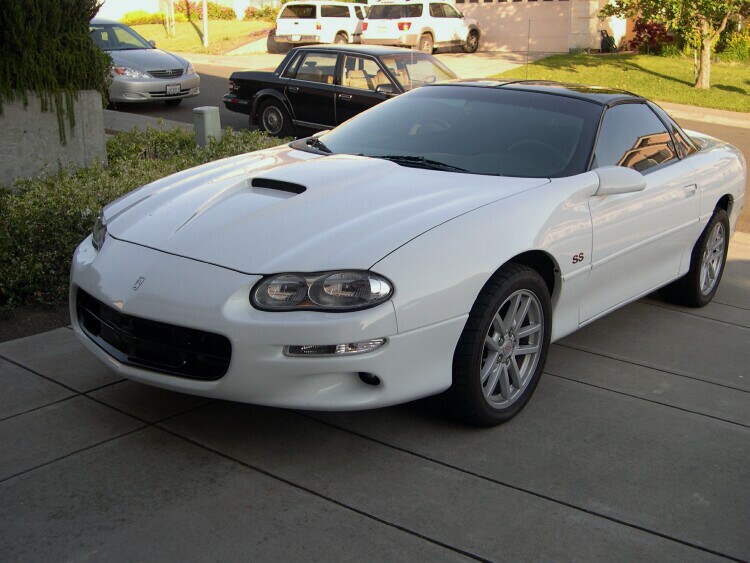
A 2001 Camaro SS